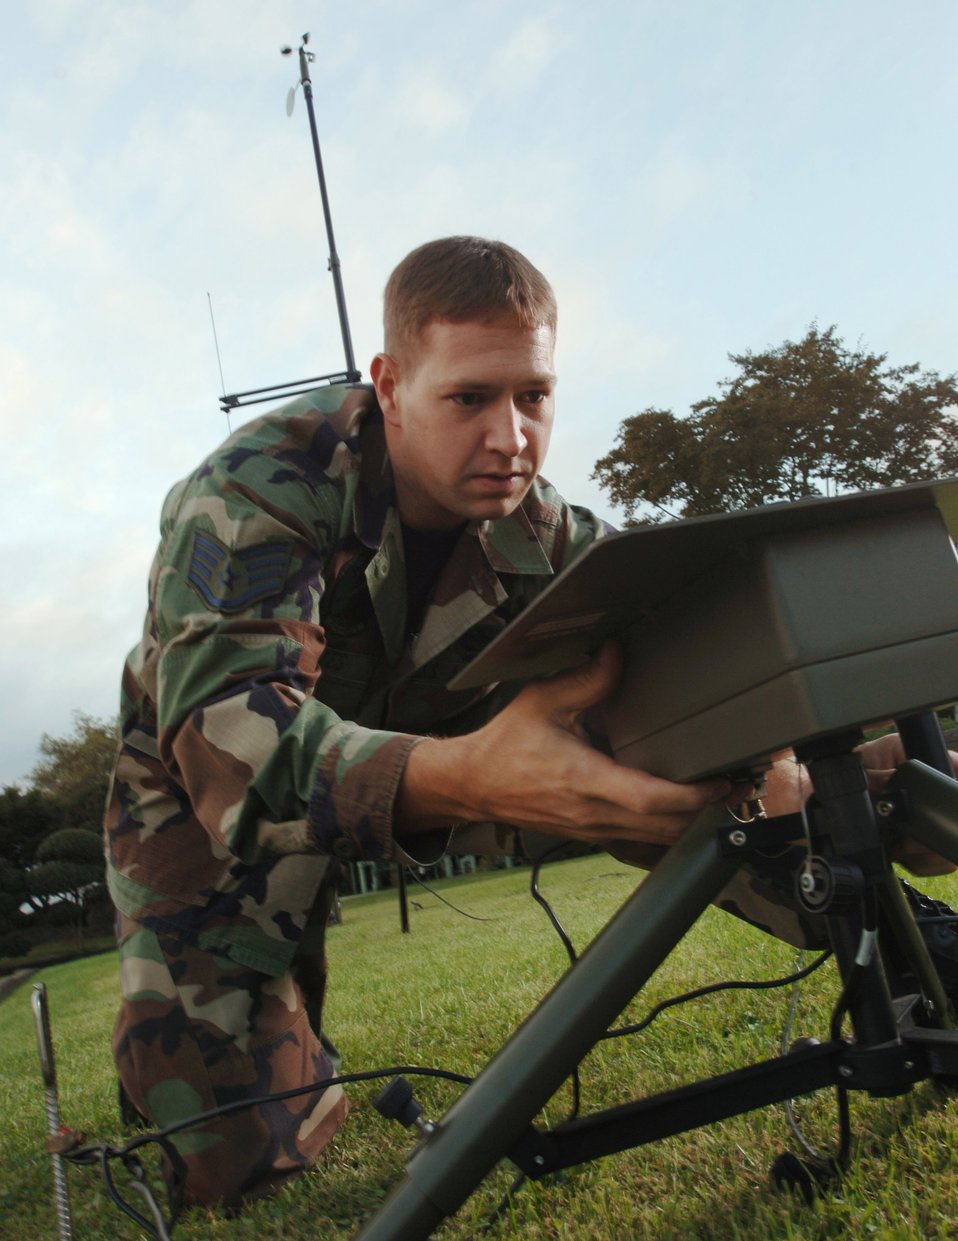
Weather update

YOKOTA AIR BASE, Japan -- Staff Sgt. Daniel Hayes set up a tactical meteorological observation system during training at the flightline here. The system is a collection of weather sensors connected to a computer and Iridium data modem that measure cloud base, surface pressure, temperatures, dew points, wind speed and density altitude. It provides near-real-time mission-critical weather date to war planners and decision makers. The sergeant is a member of the 374th Operations Support Squadron combat weather team here.